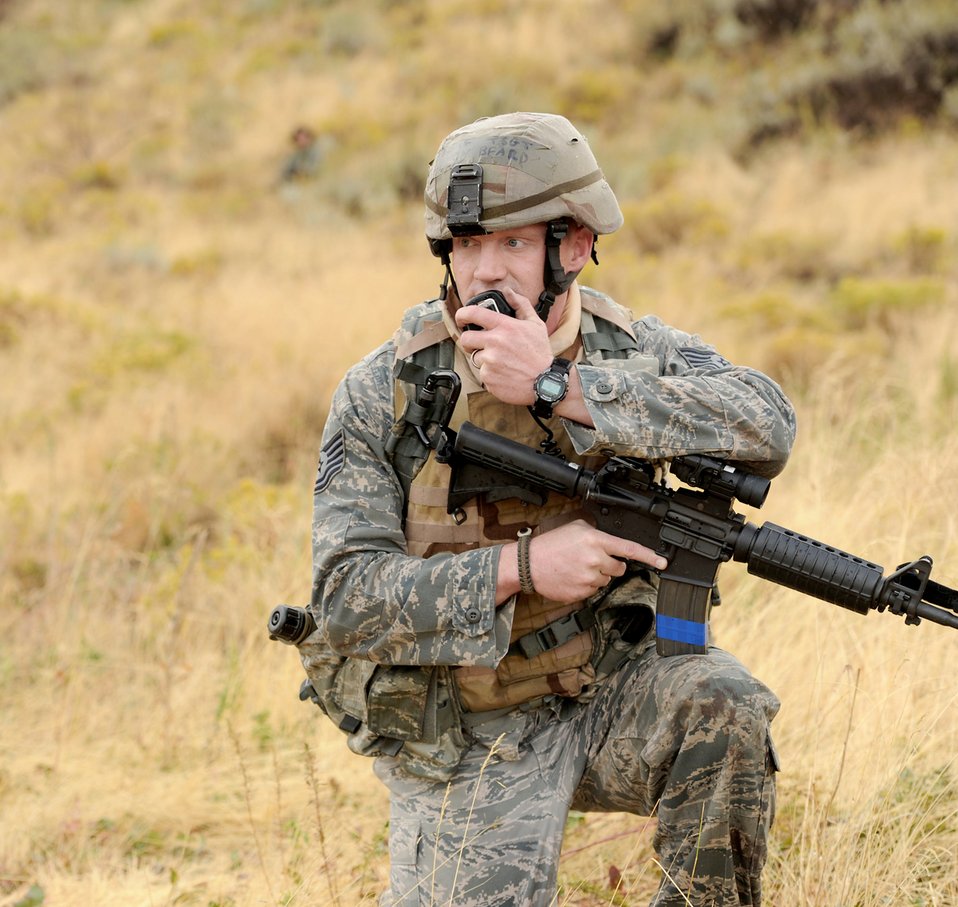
Operational Readiness Exercise 10-4

Tech. Sgt. Ron Beard radios in a perimeter check during an Operational Readiness Exercise 10-4 Oct. 7, 2010, at Hill Air Force Base, Utah. The exercise will prepare Airmen for an upcoming inspection next month. Sergeant Beard is assigned to the 419th Security Forces Squadron.